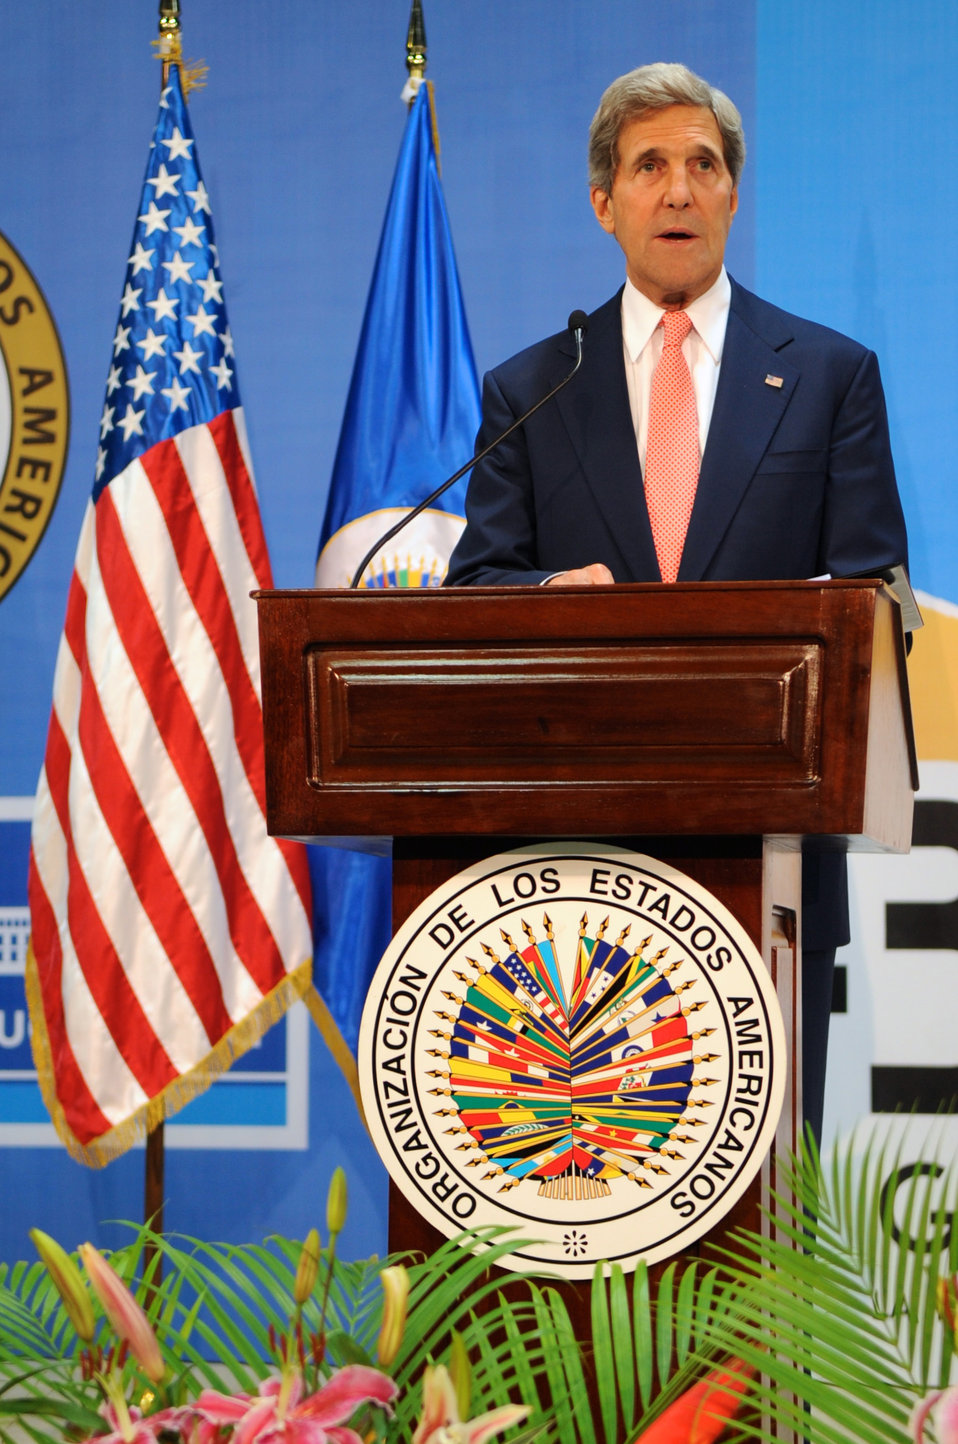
Secretary Kerry Holds a News Conference

U.S. Secretary of State John Kerry holds a news conference addressing regional issues amid an Organization of American States ministerial meeting in Antigua, Guatemala, on June 5, 2013.